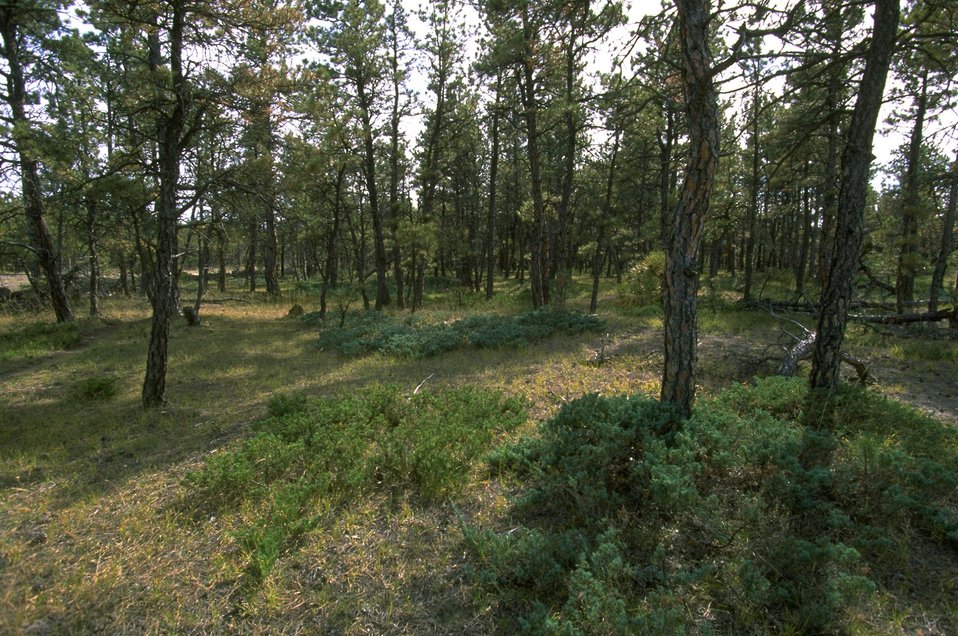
Acid Shale Area of Critical Environmental Concern (ACEC)